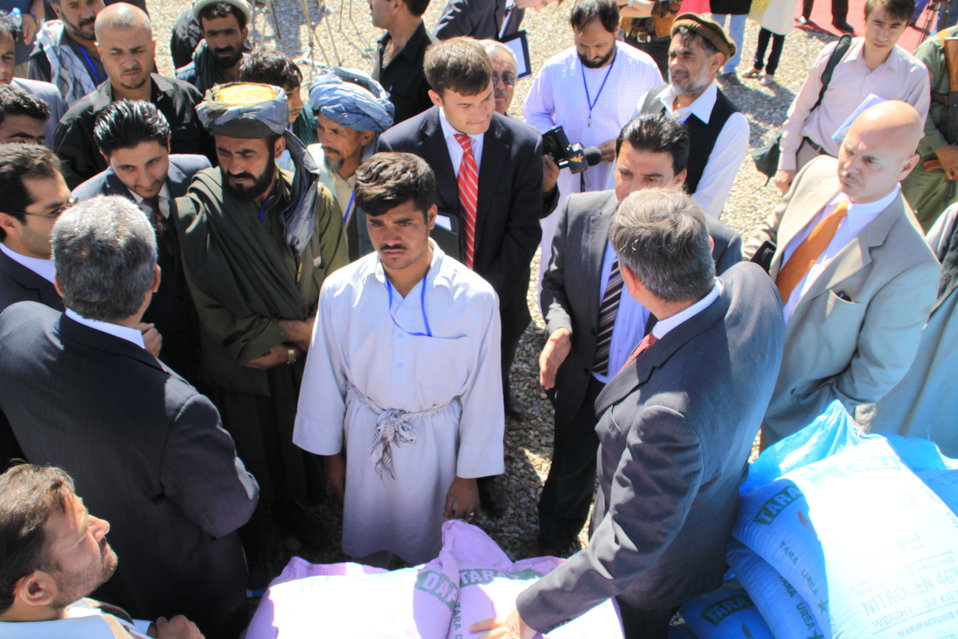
AVIPA Plus Wheat Seed Distribution 101005

US Ambassador Karl Eikenberry and USAID Acting Mission Director Kevin Brownawell joined the Minister of Agriculture, Irrigation and Livestock, H.E. Minister Mohammed Rahimi in signing a Memorandum of Understanding and distributing vouchers to area farmers for wheat and fertilizer.

US Ambassador Karl Eikenberry and USAID Acting Mission Director Kevin Brownawell joined the Minister of Agriculture, Irrigation and Livestock, H.E. Minister Mohammed Rahimi in signing a Memorandum of Understanding and distributing vouchers to area farmers for wheat and fertilizer.